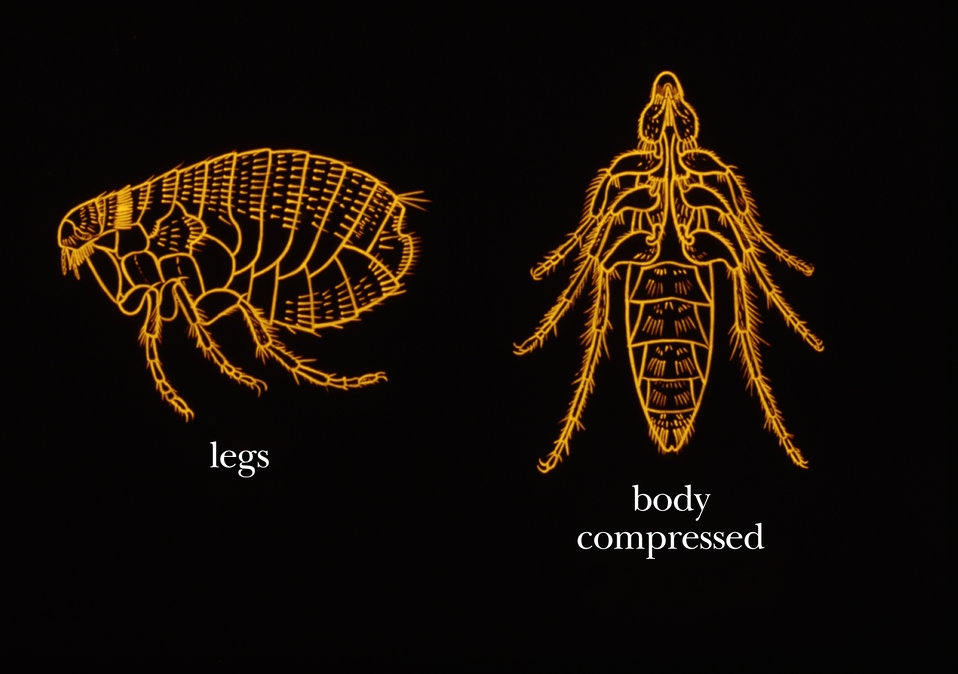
This illustration shows some of the identifying morphologic characteristics of a flea.